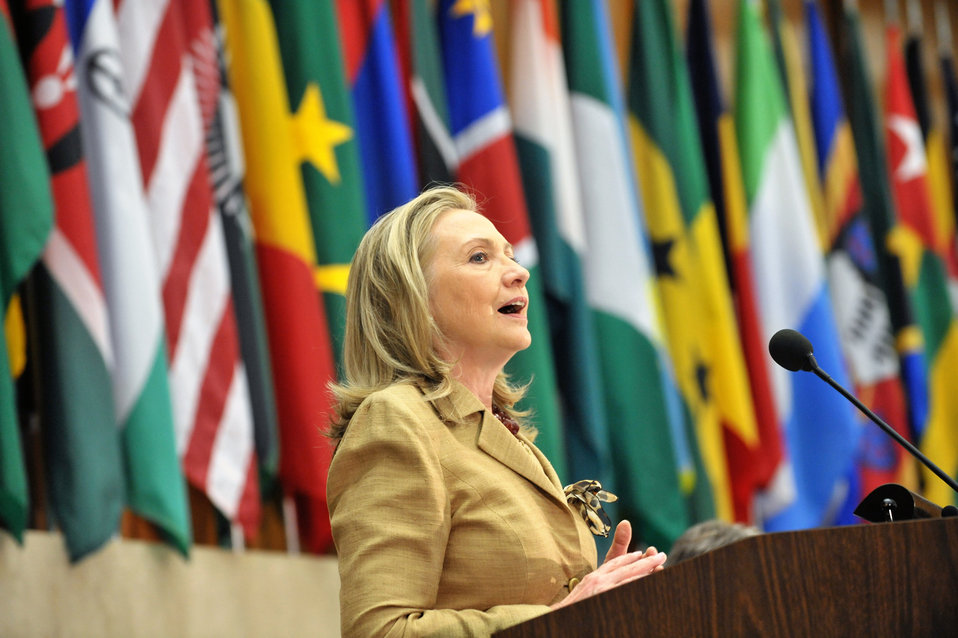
Secretary Clinton Delivers Remarks at the 2012 African Growth and Opportunity Act Forum

U.S. Secretary of State Hillary Rodham Clinton delivers opening remarks at the 2012 African Growth and Opportunity Act (AGOA) Forum to mark Global Economic Statecraft Day at the U.S. Department if State in Washington, D.C. on June 14, 2012.